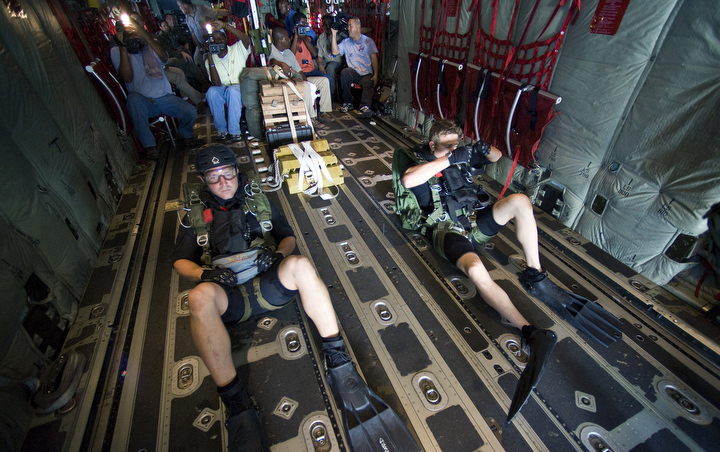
Operation Southern Partner

On board a C-130J Hercules, Capt. Travis Shepard, a combat rescue officer (left), and Senior Airman Brandon Smith, a pararescueman, prepare to demonstrate a rigged alternate method zodiac, or RAMZ, capability jump into the Caribbean Ocean June 9 for members of the Belize National Coast Guard and local media during Operation Southern Partner.